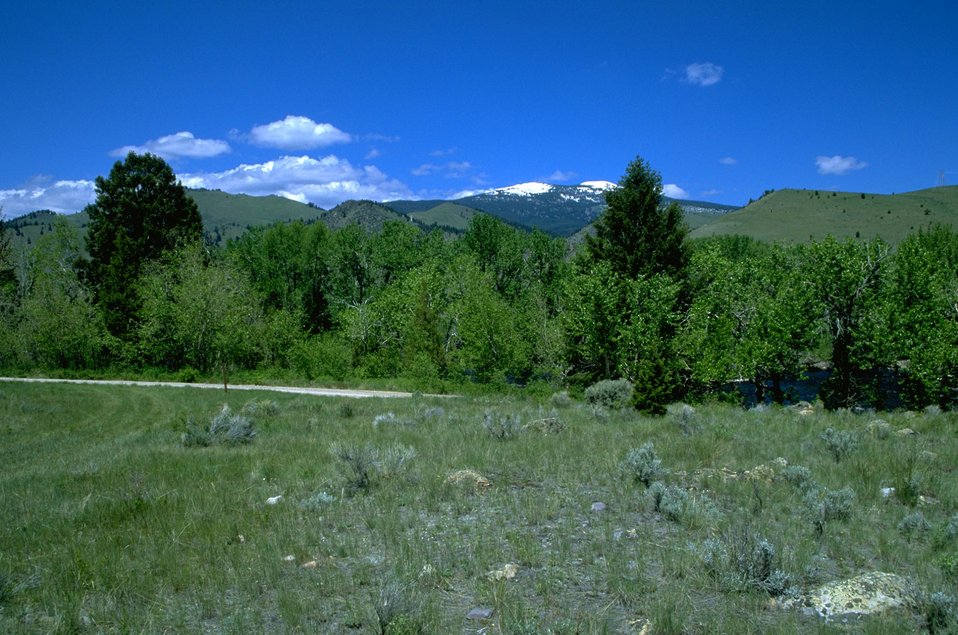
Camping along the Big Hole River